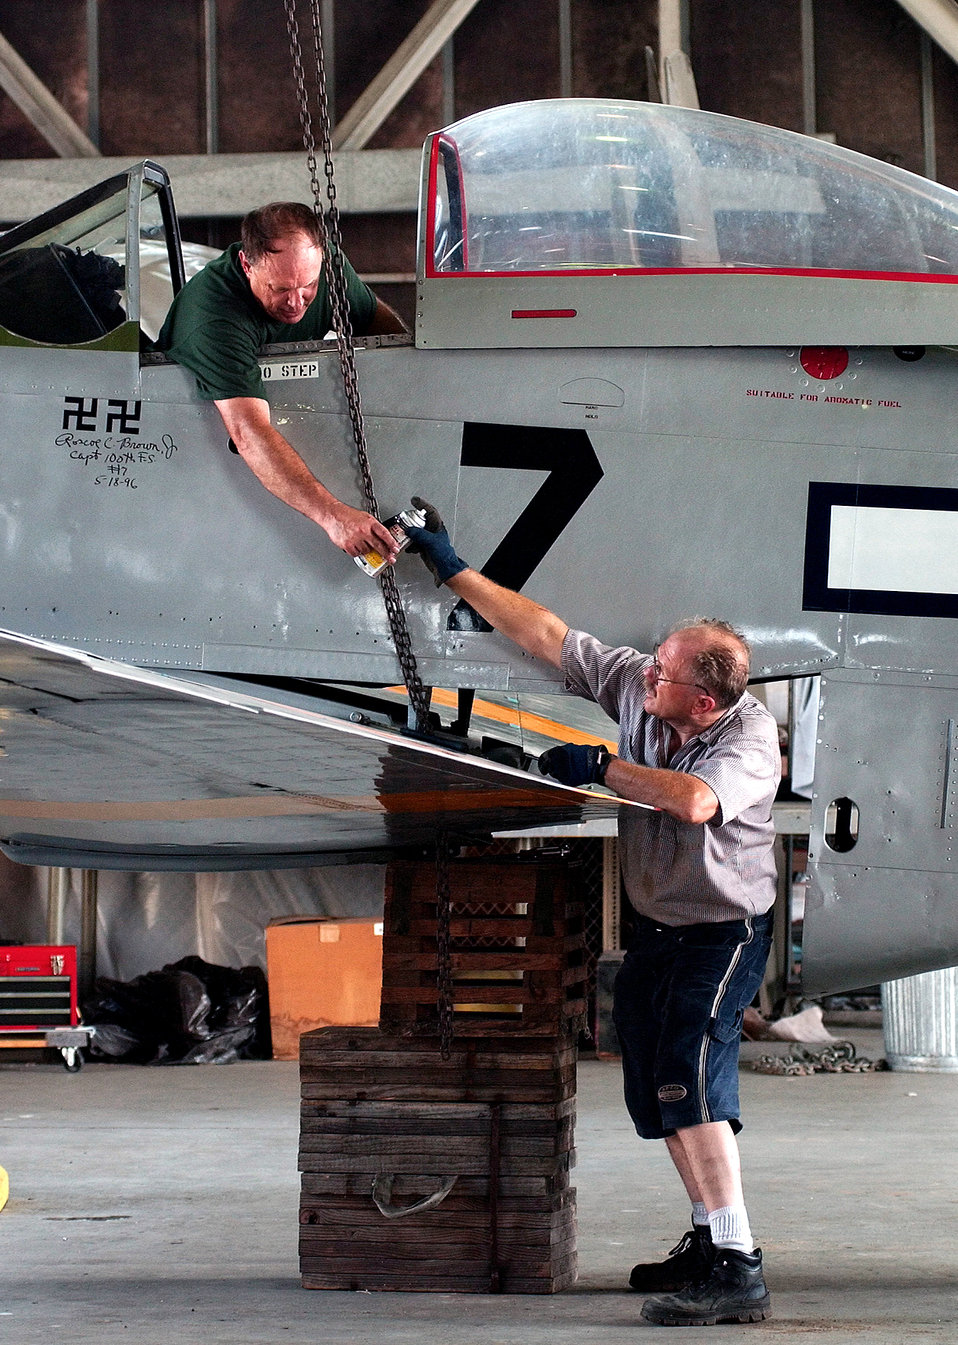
Centennial of Flight

DOVER AIR FORCE BASE, Del. -- Danny Parmer passes a can of lubricant up to Lynn Hunt to loosen bolts on a P-51 Mustang. The aircraft had to be taken apart for transport on a flatbed truck to New York. The P-51 and an F-16 Fighting Falcon will be on display in Rockefeller Plaza until Aug. 18 as part of the Air Force's Centennial of Flight Exposition. Parmer works with All Coast Aircraft Recovery Incorporated while Hunt is an Aero Crafter technical consultant.